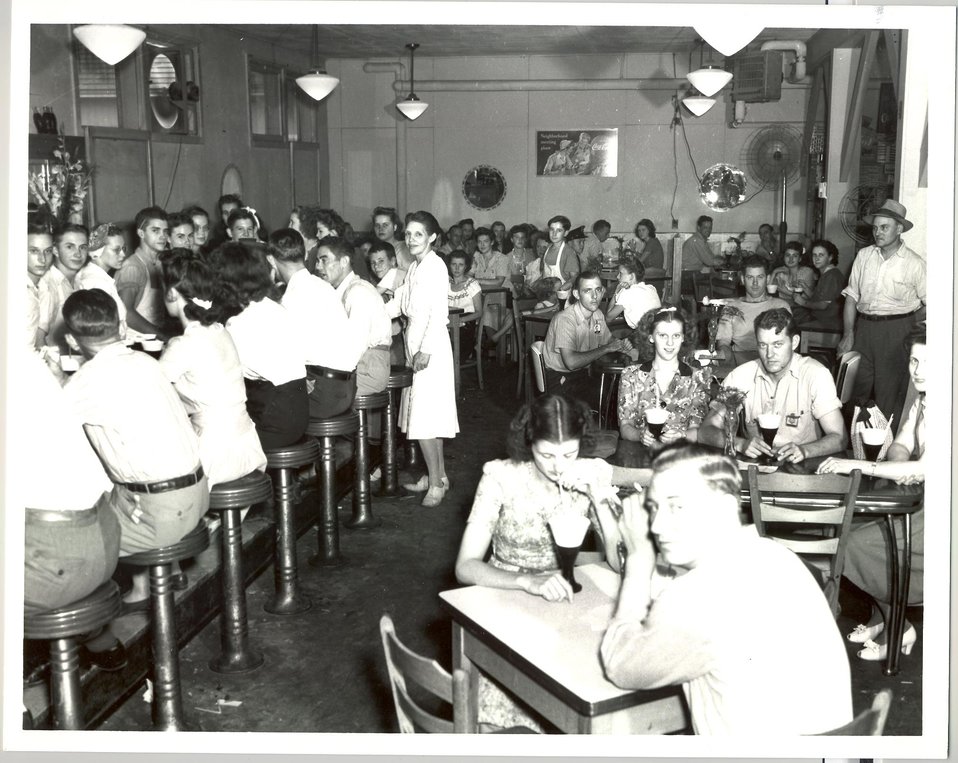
Crowd at Hoskins Drug Store